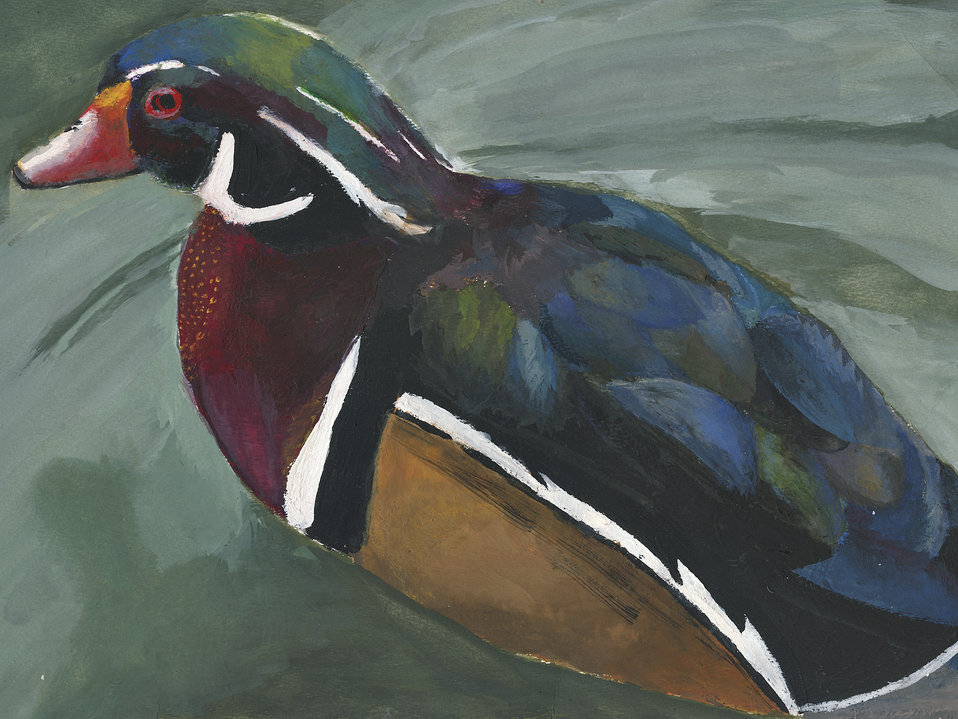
Vermont

2012 Jr Duck Stamp Program
State Best of Show
Vermont